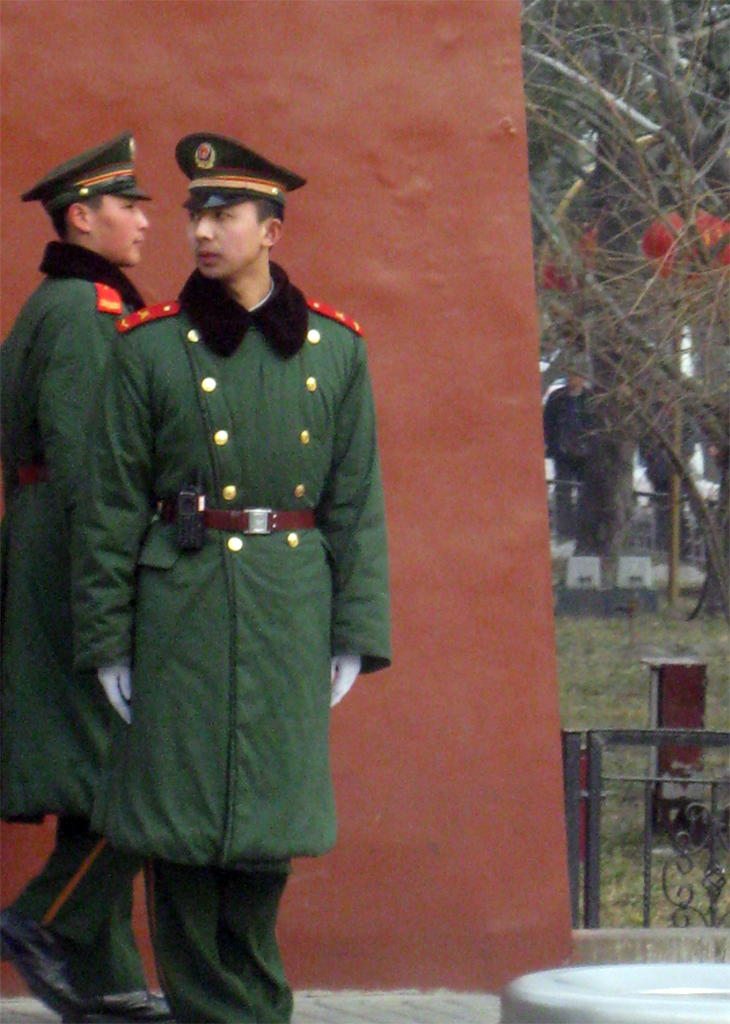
Guards in Beijing

Behind the Scenes: Guards patrolling in Beijing, China February 21, 2009.